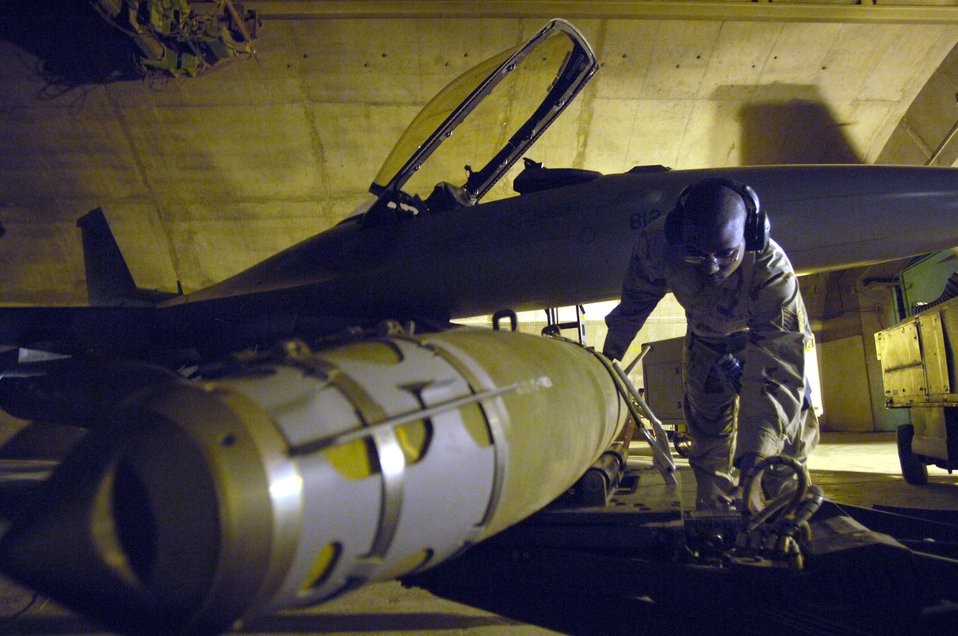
Arming the Falcons for fight

Staff Sgt. Christopher Curry prepares to load munitions on an F-16 Fighting Falcon March 4 at Balad Air Base, Iraq. He is assigned to the 332nd Expeditionary Aircraft Maintenance Squadron.